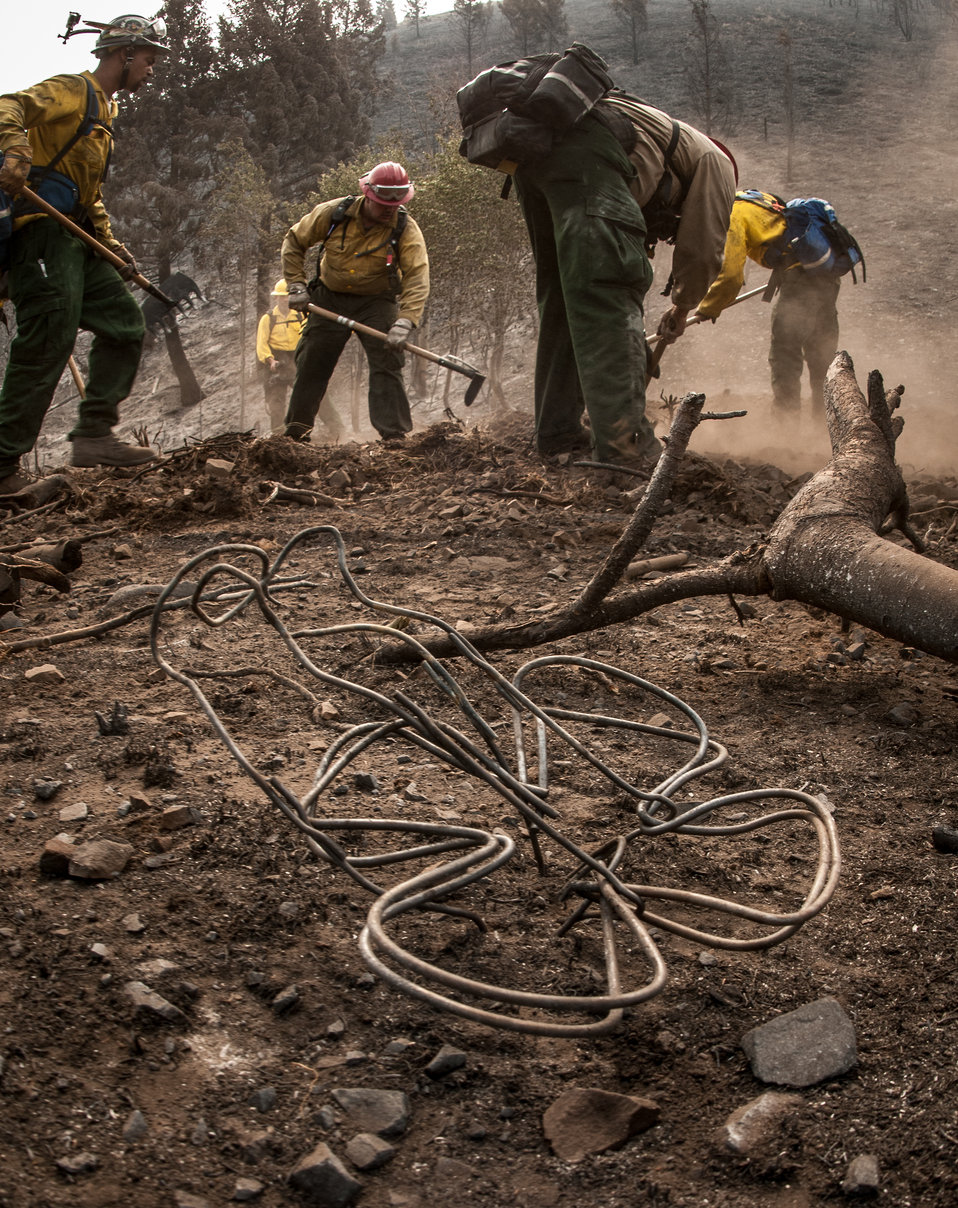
Southern Plains and Comanche Type 2 Initial Attack Crews and an Engine Crew work together to extinguish underground smoldering fires in roots or buried tree limbs, using a variety of hand tools and fire suppressing foam, during the Beaver Creek Fire, west of Hailey, ID, on Wednesday, Aug 21, 2013.